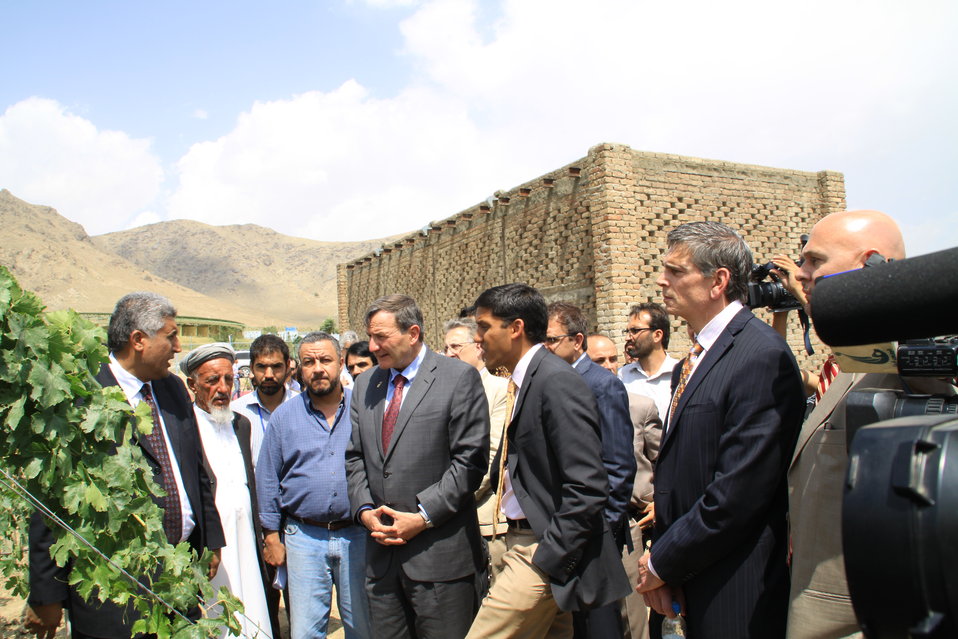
Badam Bagh Farm